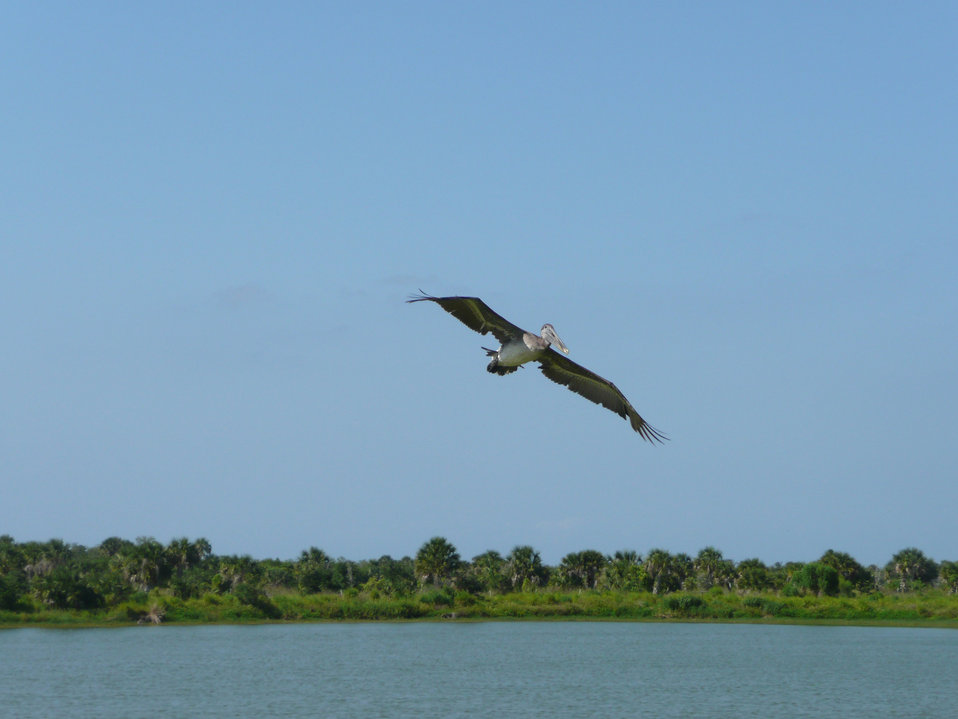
Photo of the Week - An oil-free brown pelican soars over Pelican Island National Wildlife Refuge (FL)

Photo of the Week - 05/11/2010

One of the birds caught in the oil spill, this brown pelican was cleaned and released. Here it is seen soaring over Pelican Island National Wildlife Refuge near Vero Beach, Florida on Monday May 10, 2010.